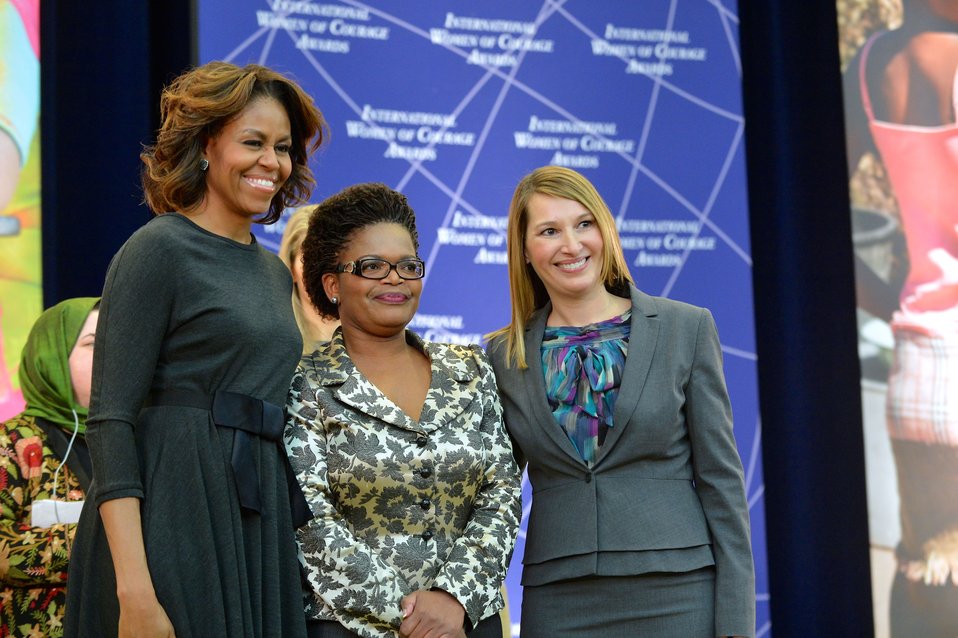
First Lady Michelle Obama and Deputy Secretary Higginbottom With 2014 IWOC Awardee Beatrice Mtetwa of Zimbabwe

First Lady Michelle Obama and Deputy Secretary Heather Higginbottom pose for a photo with 2014 International Women of Courage Awardee Beatrice Mtetwa, a human rights lawyer in Zimbabwe, at the 2014 Secretary of State’s International Women of Courage Award Ceremony at the U.S. Department of State in Washington, D.C., on March 4, 2014.